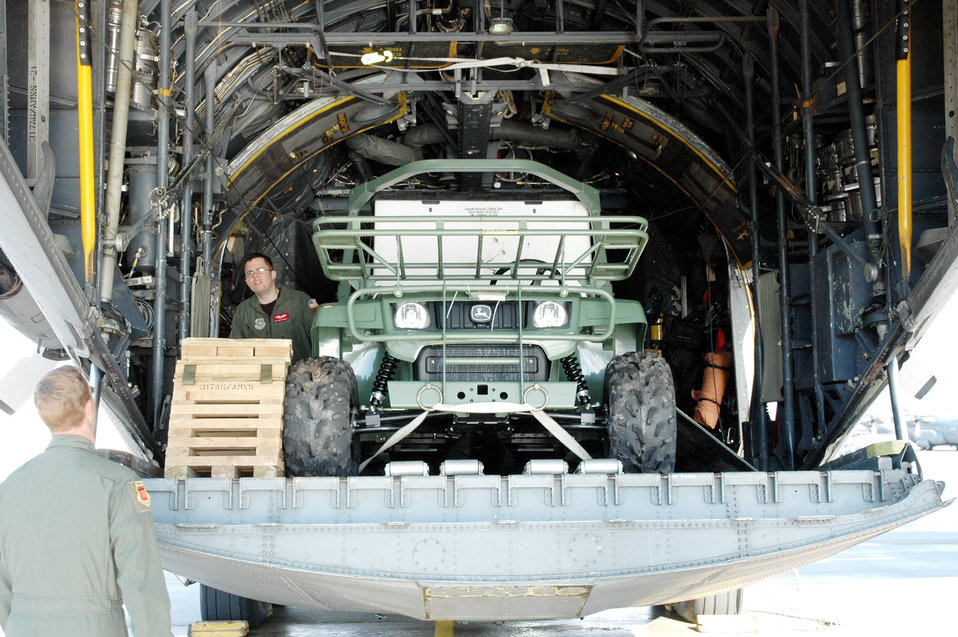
Dyess Airmen support Haiti relief efforts

Staff Sgt. Henry Morgan discusses the load aboard a C-130 Hercules with a fellow loadmaster Jan. 17, 2010 at Pope Air Force Base, N.C. The C-130 crew of six departed Dyess AFB, Texas to support relief efforts following the 7.0-magnitude earthquake in Haiti Jan. 12, 2010. Sergeant Morgan is assigned to the 317th Airlift Group.